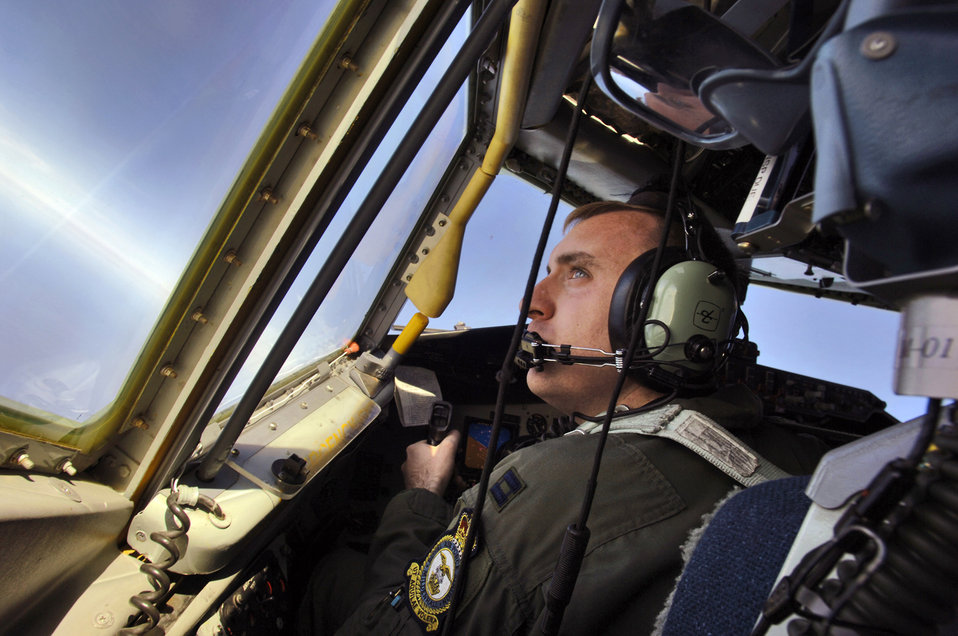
Long days, flexibility part of tanker crew's life

Capt. Rob Kline scans the sky as he pilots a KC-135 Stratotanker toward a refueling rendezvous over the North Sea on July 25. The 351st Air Refueling Squadron aircrew launched from Royal Air Force Mildenhall, England, and refueled six Belgian F-16 Fighting Falcons over the North Sea participating in exercise Wycombe Warrior.